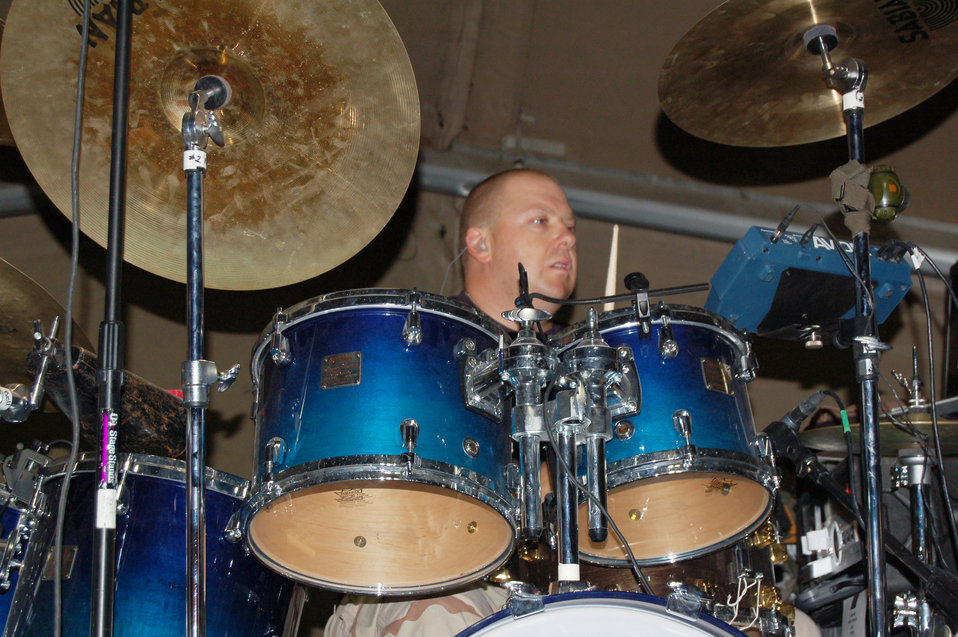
Band members, Kyrgyz citizens share culture through music

Tech. Sgt. Robert Smith performs a crowd pleasing drum solo of Led Zepplin's